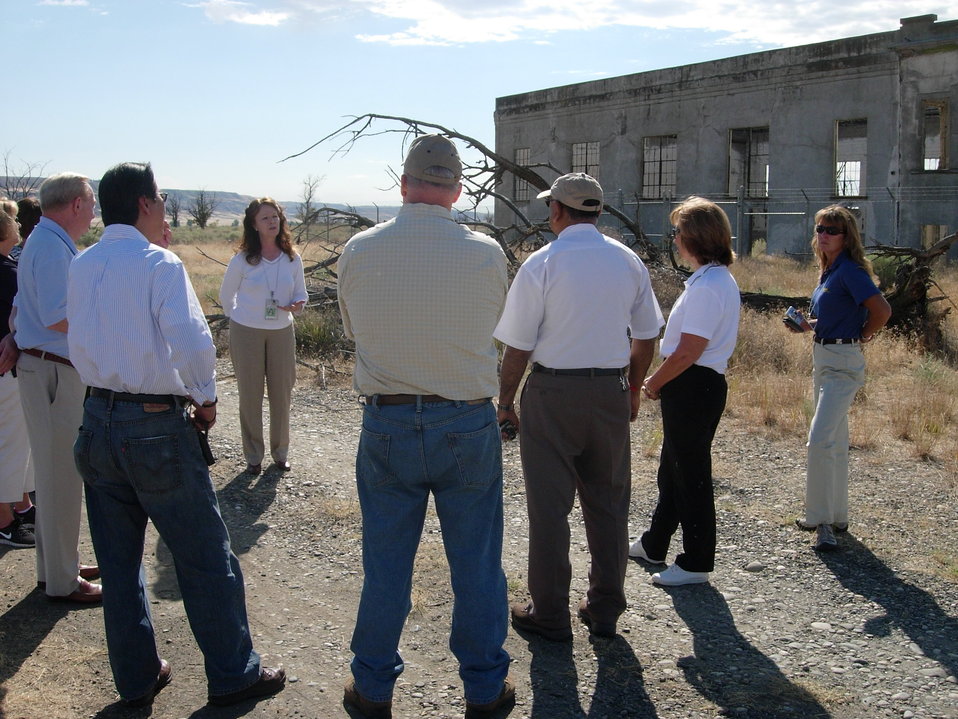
Tri-Cities Visitor and Convention Bureau tour of the Hanford Site

DOE-RL Archaeologist Mona Wright describes what it was like to live in the town of Hanford before the Manhattan Project. The building in the background is Hanford High School which closed in 1943.